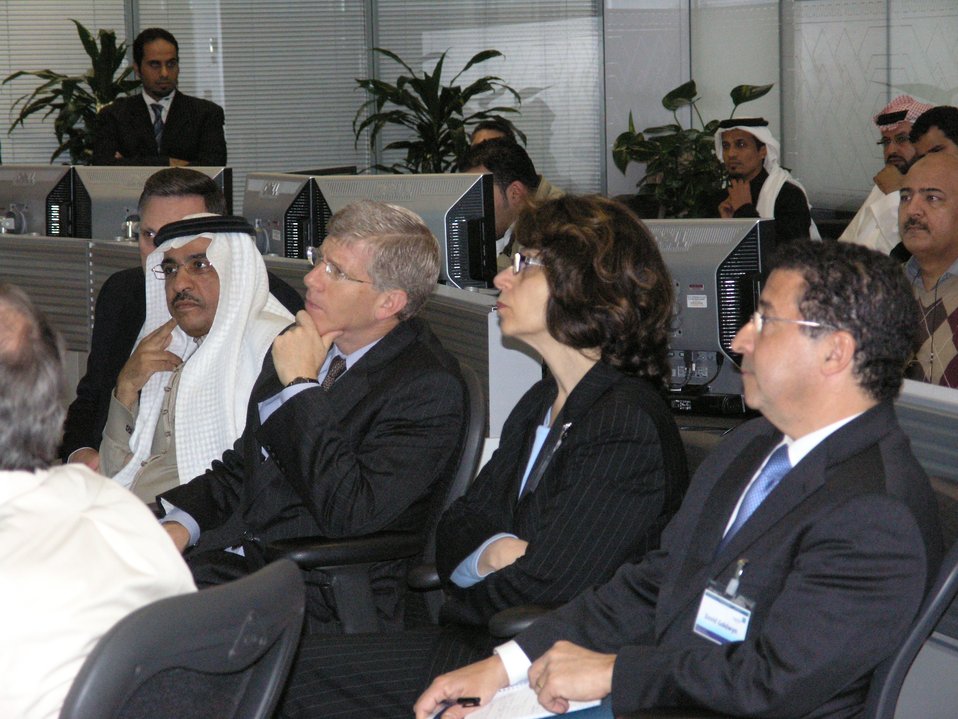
Deputy Secretary Poneman listens to officials at Saudi Aramco.